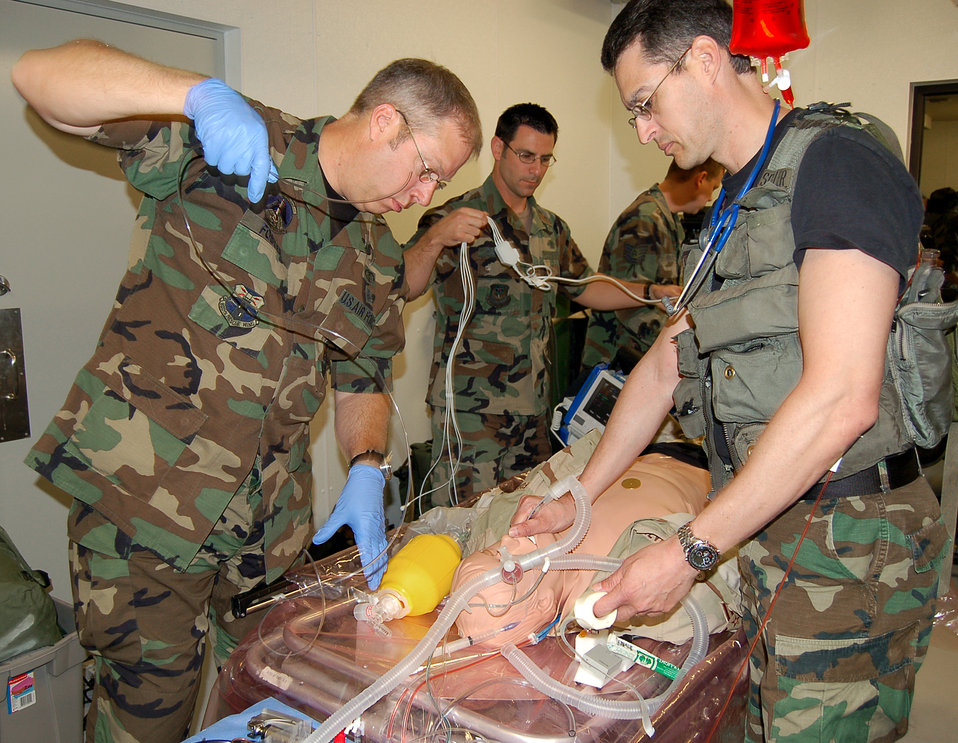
Mannequins help improve casualty care

Clockwise from right, Master Sgt. John Schiller, and Tech. Sgts. Dave Foster, Robert Carcieri and Kirk Bobleter treat and stabilize their unique patient, a computerized mannequin, during a new Air Force Special Operations Command casualty evacuation course on Thursday, May 18, 2006. The realistic training is geared to better prepare medics for the chaos of combat operations. All four students are from the 920th Rescue Wing, Patrick Air Force Base, Fla., and were among the first Airmen to attend the new course.